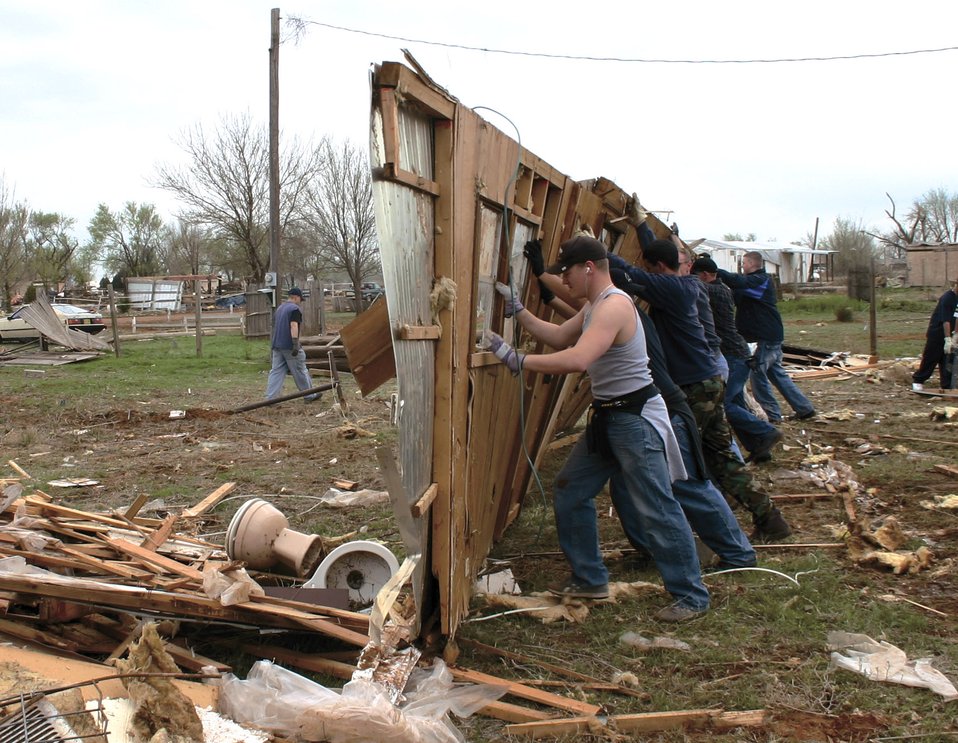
Cannon volunteers lend hands, hope in wake of disaster

More than 500 Airmen from Cannon Air Force Base have assisted Clovis, N.M., residents in storm clean up. A tornado hit the town, located six miles east of the base, March 23 leaving homes, property and businesses in ruin. Airmen will continue to assist in clean up efforts on an individual basis through the